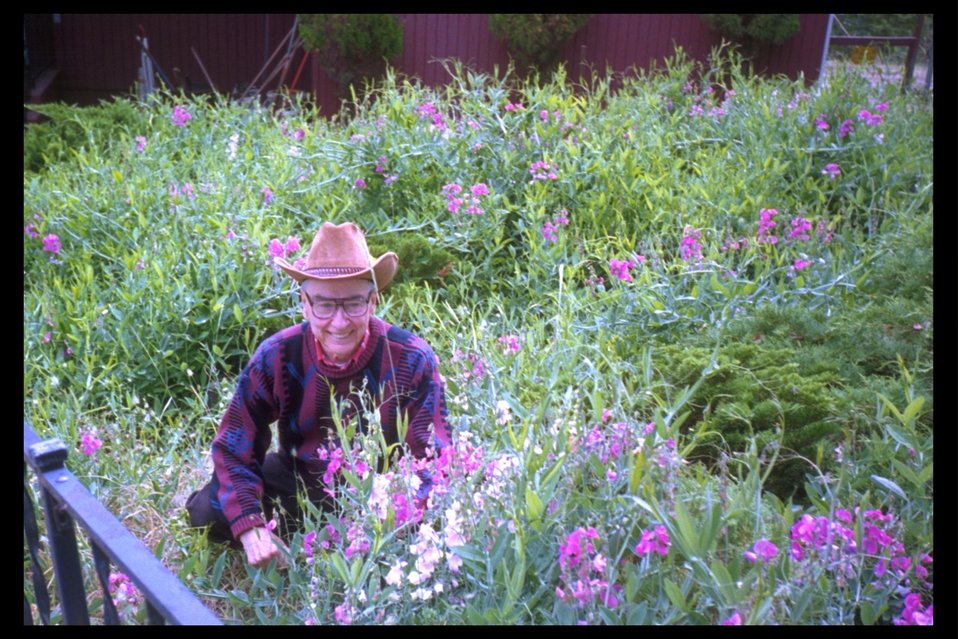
Miles Hill in his yard amongst the sweetpeas.